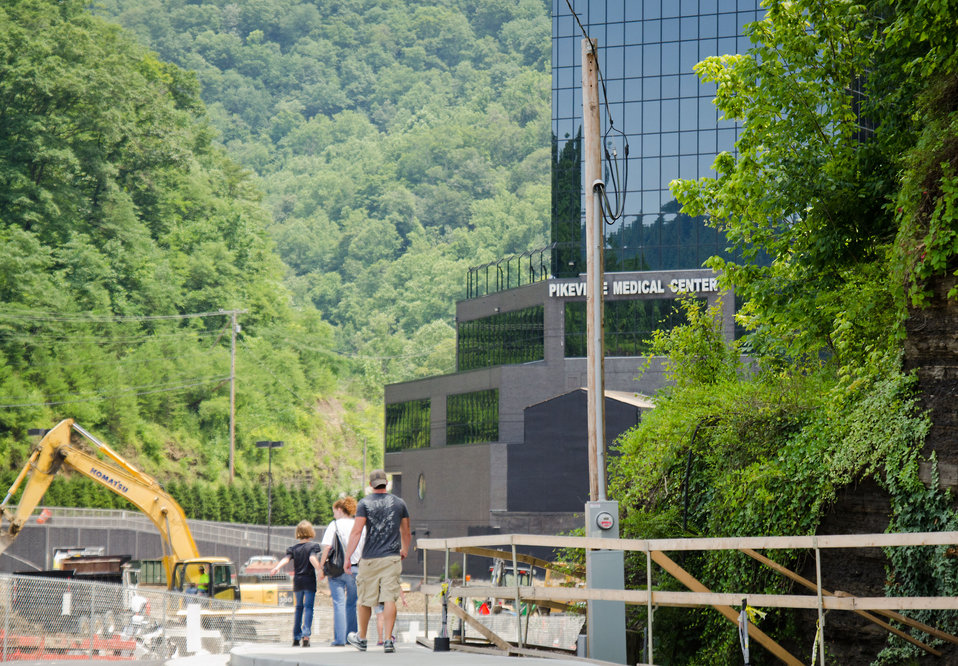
Detour, arrow, construction and temporary signs are posted on and across the re-utilized buildings and properties at various ends of multiple parking lots are common sights at the Pikeville Medical Center on Tuesday, July 12, 2011, in Pikeville, KY. Nearby, the above ground construction phase of Pikeville Medical Center (PMC) expansion project is underway, after months of infrastructure construction and rain delays. This is one of Kentucky’s largest American Recovery and Reinvestment Act (ARRA) projects. The $44.6 million Community Facilities Loan will finance construction of a new medical office building and parking garage.